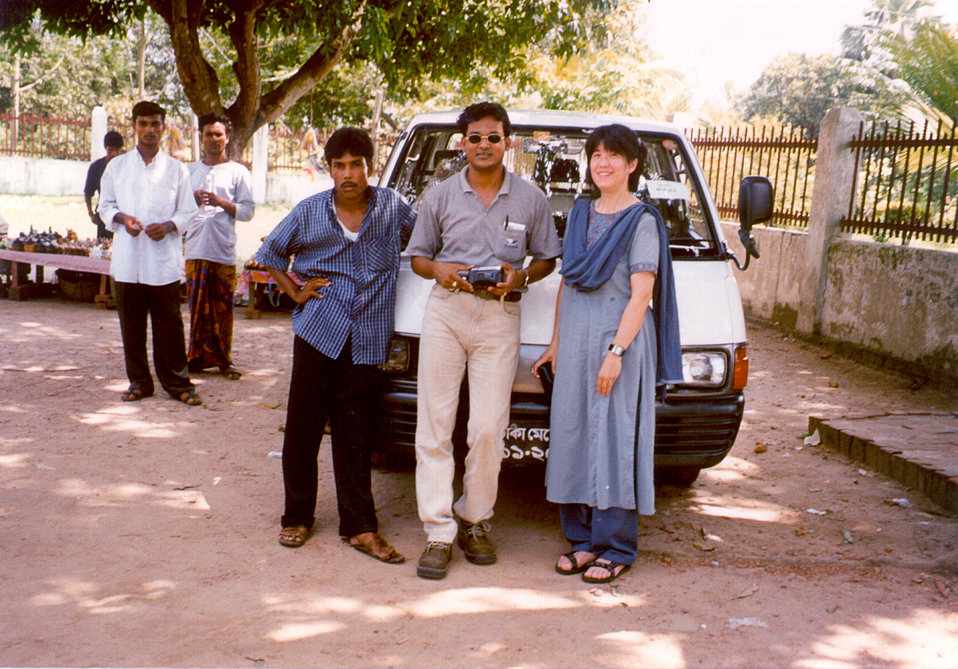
This was Dr. Badrul Munir Sohel, of the WHO (Cntr.) and Pamela Ching, MS, ScD, of the CDC (Rt.) in Bangladesh, 1999.